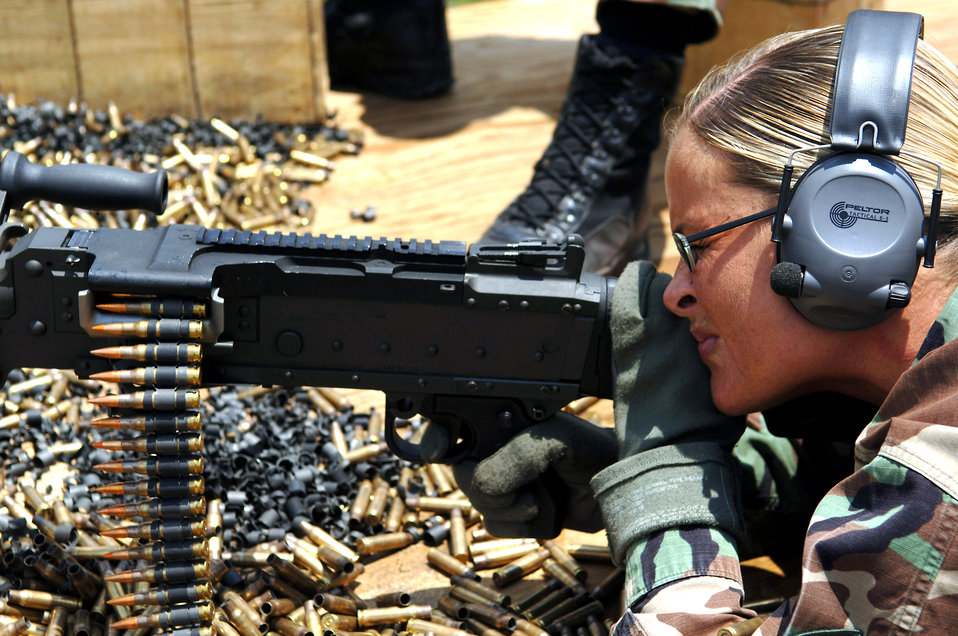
Combat arms training

Tech. Sgt. Amy Sobel fires an M240B medium machine gun during a combat arms training and maintenance class at Avon Park Air Force Range, Fla., on Thursday, May 18, 2006. Sergeant Sobel is a CATM instructor at the range. Security forces Airmen from the 6th Security Forces Squadron at MacDill Air Force Base, Fla., were at the range to train for upcoming deployments.